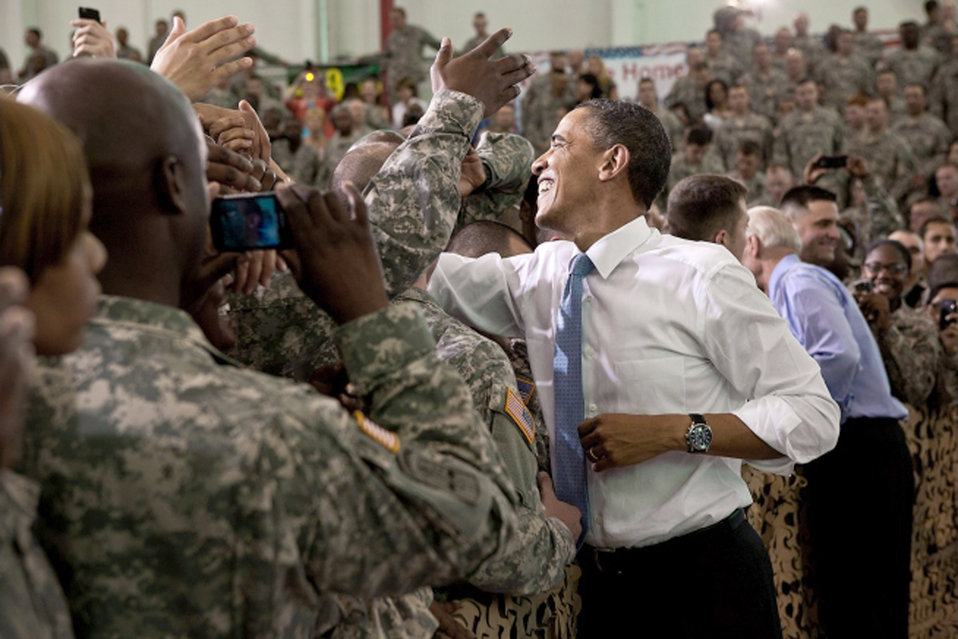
U.S. will defeat terrorists, Obama tells troops

President Barack Obama and Vice President Joe Biden shake hands with the troops following the president's remarks May 6, 2011, at Fort Campbell, Ky.